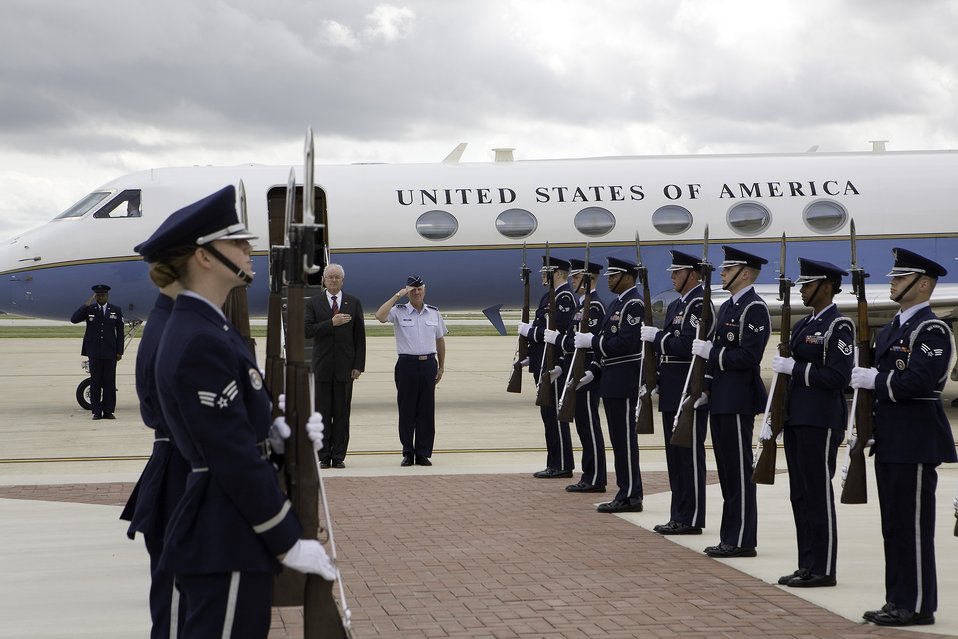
Secretary Wynne visits Lackland

Secretary of the Air Force Michael W. Wynne and Gen. William